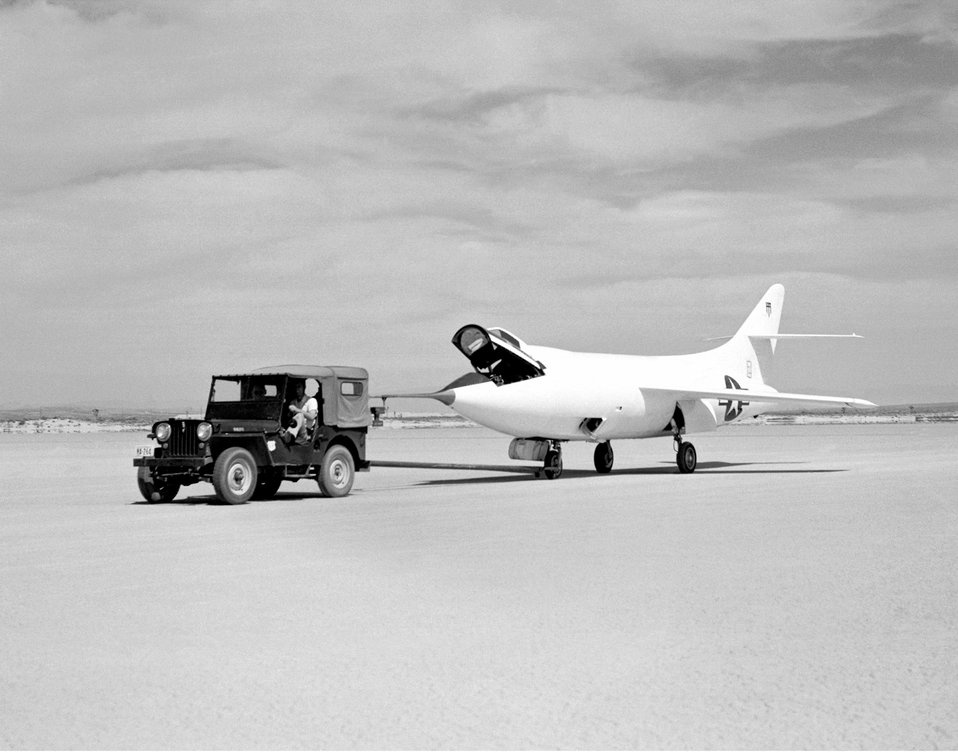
D-558-2 Skyrocket

The D-558-2 Skyrocket is towed on the lakebed of Rogers Dry Lake, Calif.